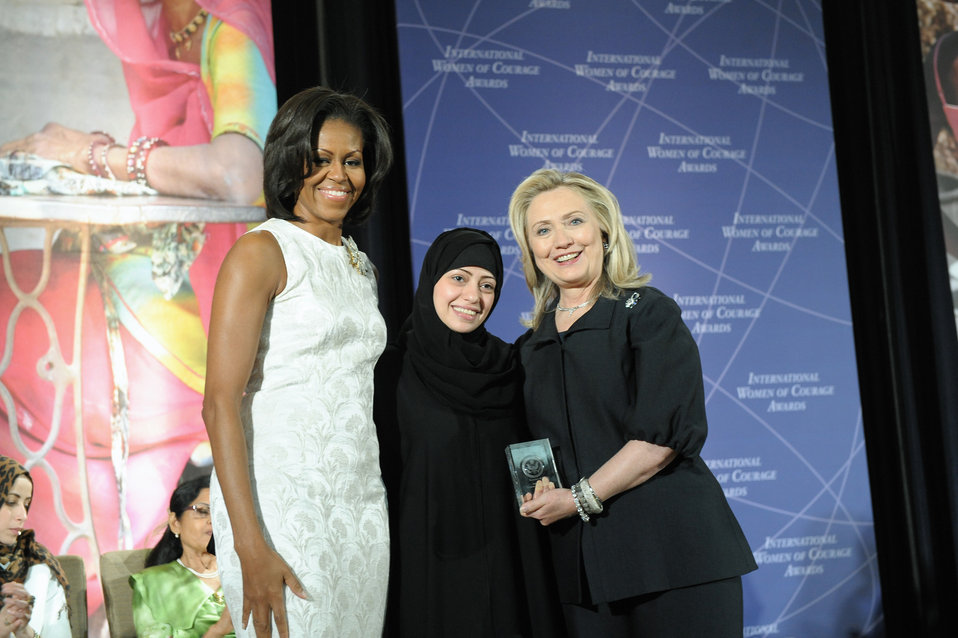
Secretary Clinton and First Lady Obama With 2012 IWOC Award Winner Samar Badawi of Saudi Arabia

U.S. Secretary of State Hillary Rodham Clinton, right; and First Lady Michelle Obama, left; pose for a photo with 2012 International Women of Courage (IWOC) Award Winner Samar Badawi of Saudi Arabia, at the U.S. Department of State in Washington, D.C., on March 8, 2012.